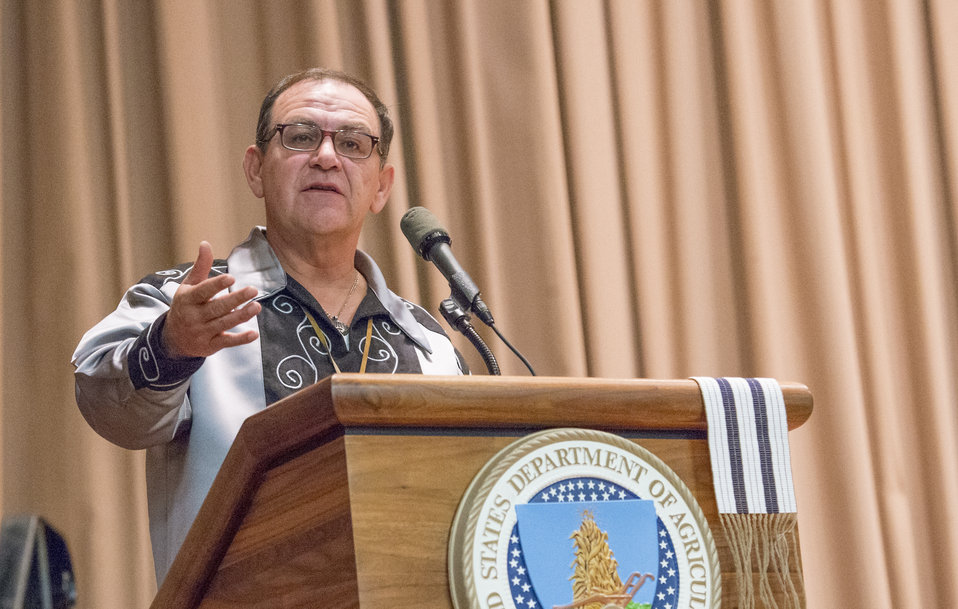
United South and Eastern Tribes President Brian Patterson makes remarks at the 2013 American Indian and Alaska Native Heritage Observance at the U.S. Department of Agriculture (USDA) on Thursday, Nov. 14, 2013 in Washington, D.C. The theme of this year’s event was “Guiding Our Destiny with Heritage and Traditions.”